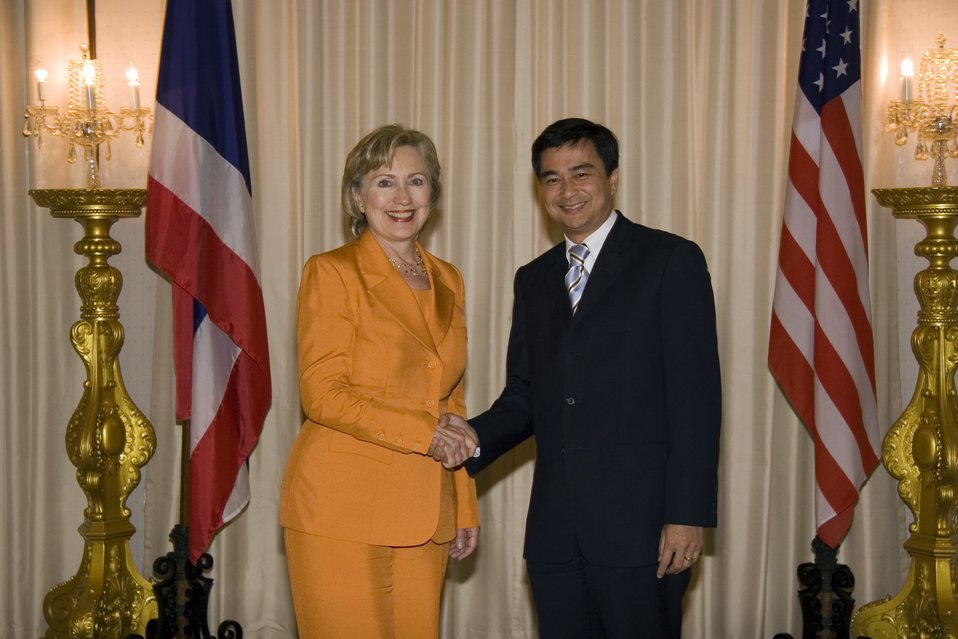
U.S.-Thailand Bilateral Meeting

U.S. Secretary of State Hillary Rodham Clinton shakes hands with Thai Prime Minister Abhisit Vejjajiva prior to the bilateral meeting at Government House in Bangkok, Thailand July 21, 2009.